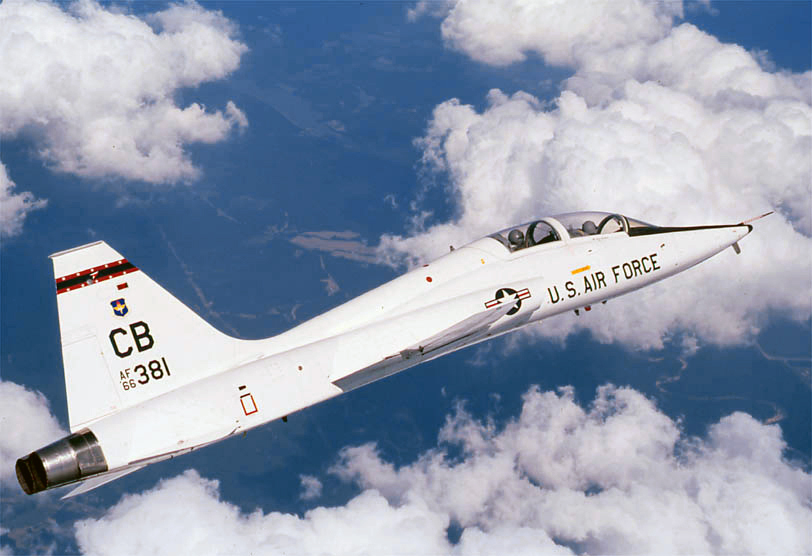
Two pilots dead in T-38C crash at Columbus AFB

The T-38 Talon is a twin-engine, high-altitude, supersonic jet trainer used in a variety of roles because of its design, economy of operations, ease of maintenance, high performance and exceptional safety record. It is used primarily by Air Education and Training Command for undergraduate pilot and pilot instructor training. Air Combat Command, Air Mobility Command and the National Aeronautics and Space Administration also use the T-38 in various roles.